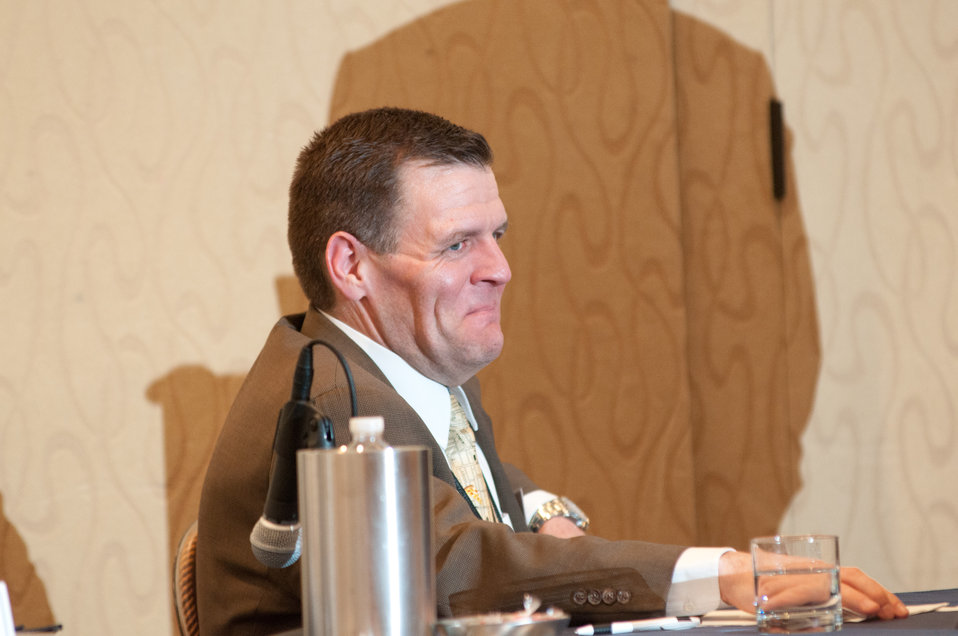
U.S. Department of Agriculture (USDA) National Agricultural Statistics Board Chair Hubert Hamer speaks on the topic Stand Up and Be Counted: Profile of the Small & Disadvantaged Farmers, during the 2013 Agricultural Outlook Forum held at the Crystal Gateway Marriott Hotel in Arlington, VA on Friday, Feb. 22, 2013. This breakout session on Risk Management for Small and Socially Disadvantaged Farmers provides a profile of small and disadvantaged farmers based on the recent Census of Agriculture to identify the size and current economic and demographic trends of these farmers. The discussion also identified risks for these farmers, the need to manage those risks for longer-term viability/sustainability, the role of the public sector, and the resources available for small and disadvantaged farmers in coping with risk.